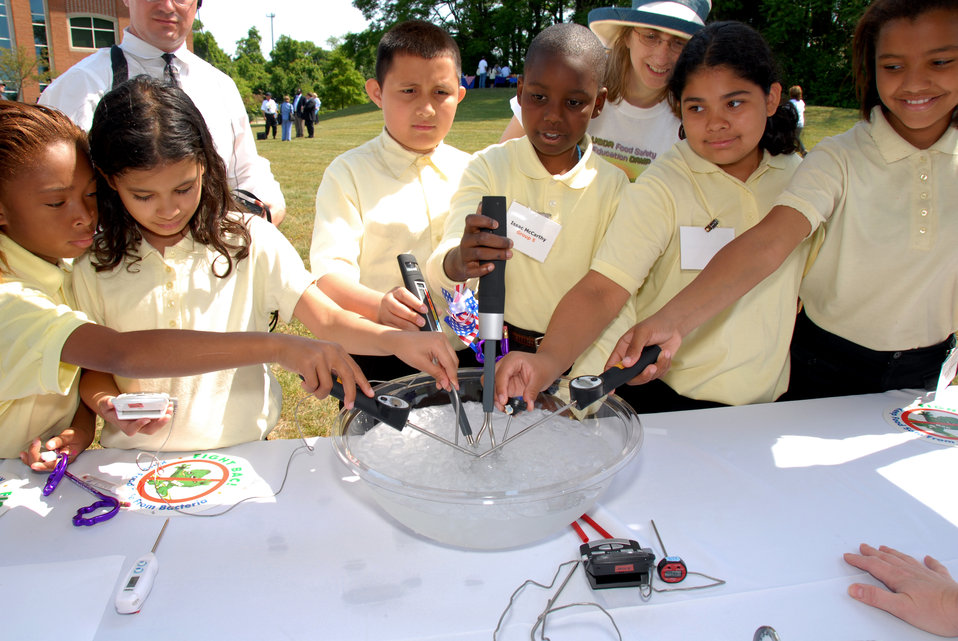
U.S. Department of Agriculture's (USDA) Food Safety and Inspection Service (FSIS) annually hosts a food safety camp that provides children with hands-on instruction about the dangers of foodborne illness and how to prevent it. This Food Safety camp was held at the USDA Beltsville, Maryland facility on May 23, 2007. Food safety campers learned how to use the various types of food thermometers.